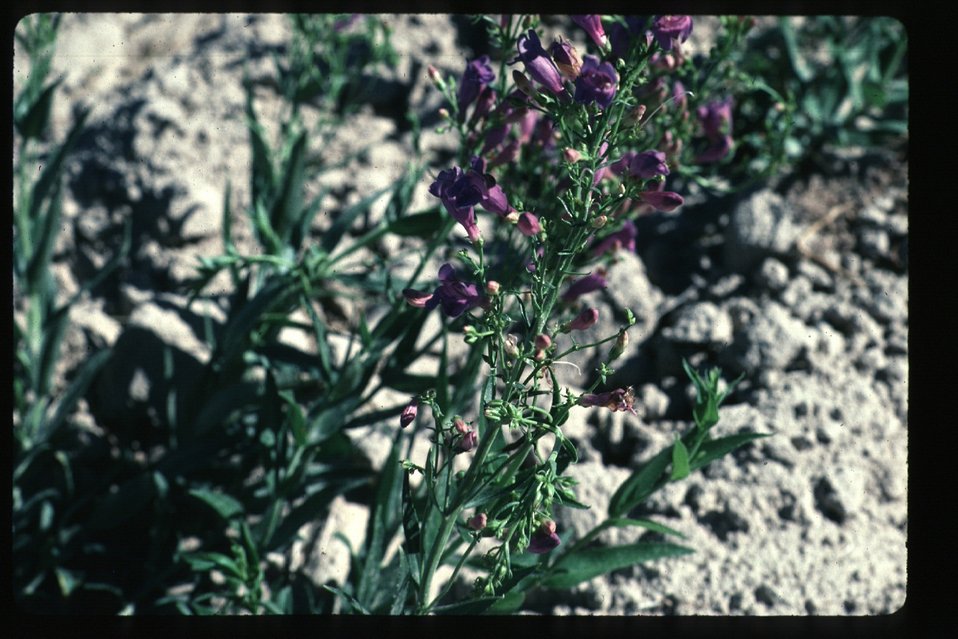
Penstemon venustus Brush, grasses Wildflowers